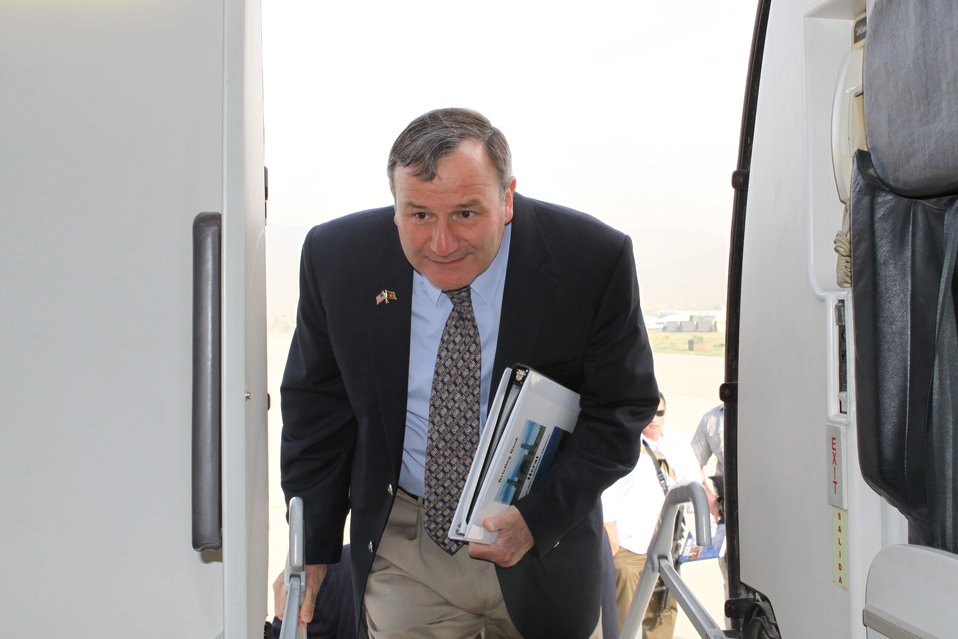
100525 Hirat Marble Conference 007